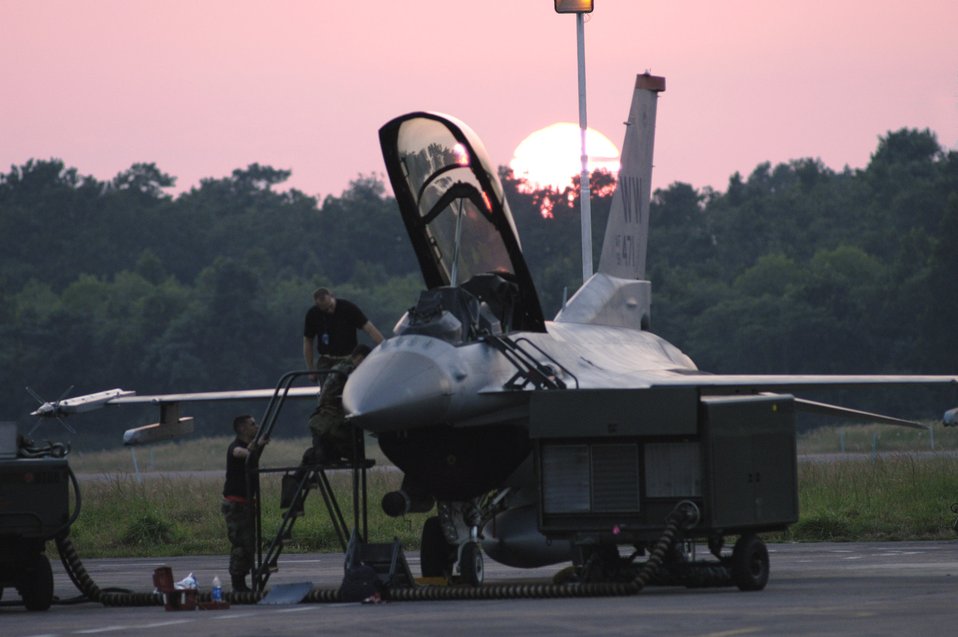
Cope India

KALAIKUNDA AIR STATION, India (AFPN) -- Staff Sgts. Lyle Janey and Allen Conard and Senior Airman Sean Mcelree put the finishing touches on an F-16 Fighting Falcon as the sun sets over Cope India 06. Halfway through the exercise, U.S. aircraft had flown 97 sorties with their Indian air force counterparts. The Airmen are all avionics specialists deployed here from the 35th Aircraft Maintenance Squadron, Misawa Air Base, Japan.